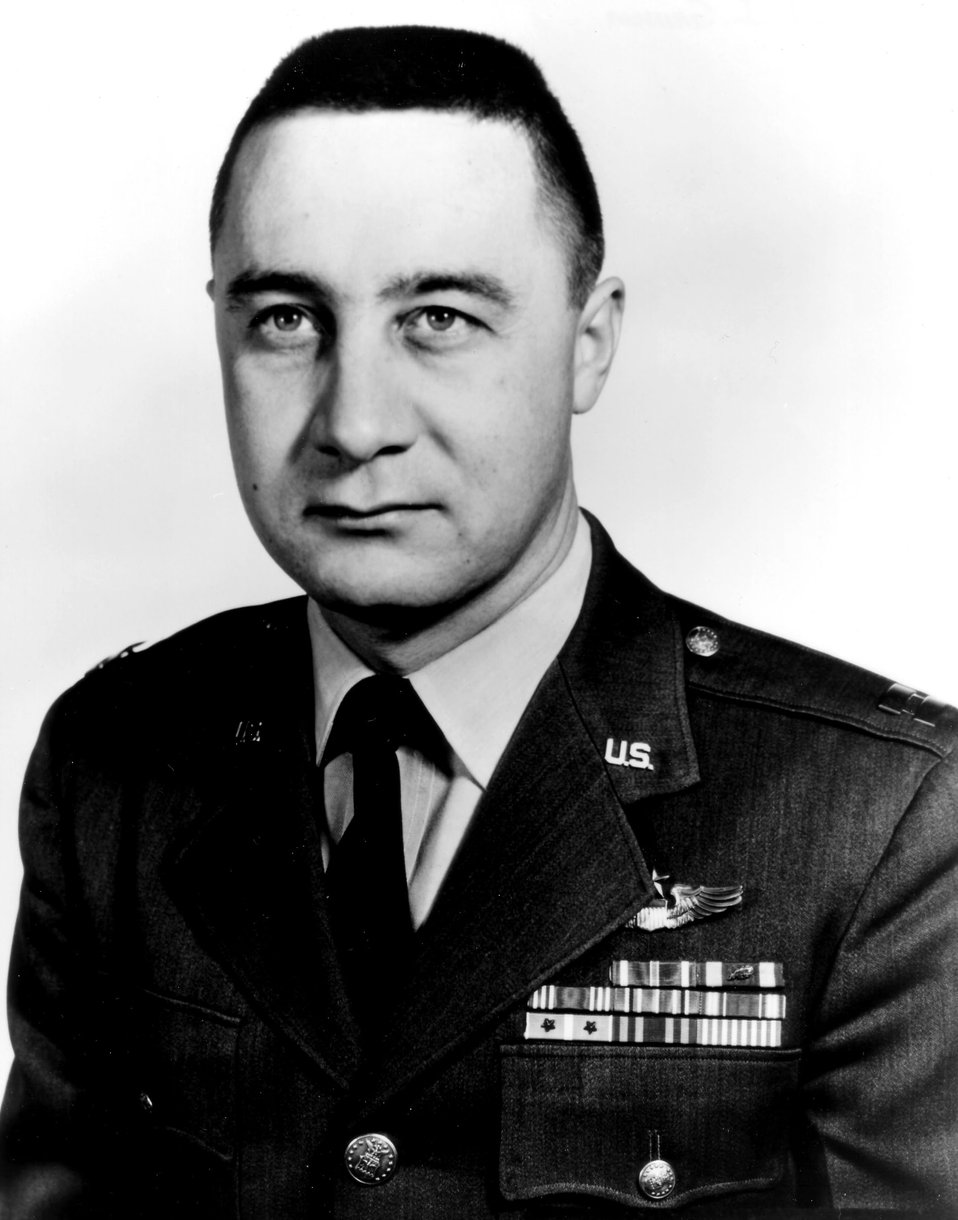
Capt. Virgil 'Gus' Grissom

Gus Grissom was one of NASA's original seven Mercury astronauts and the first man to fly in space twice. He died Jan. 27, 1967, in the Apollo 204 fire at Cape Kennedy.